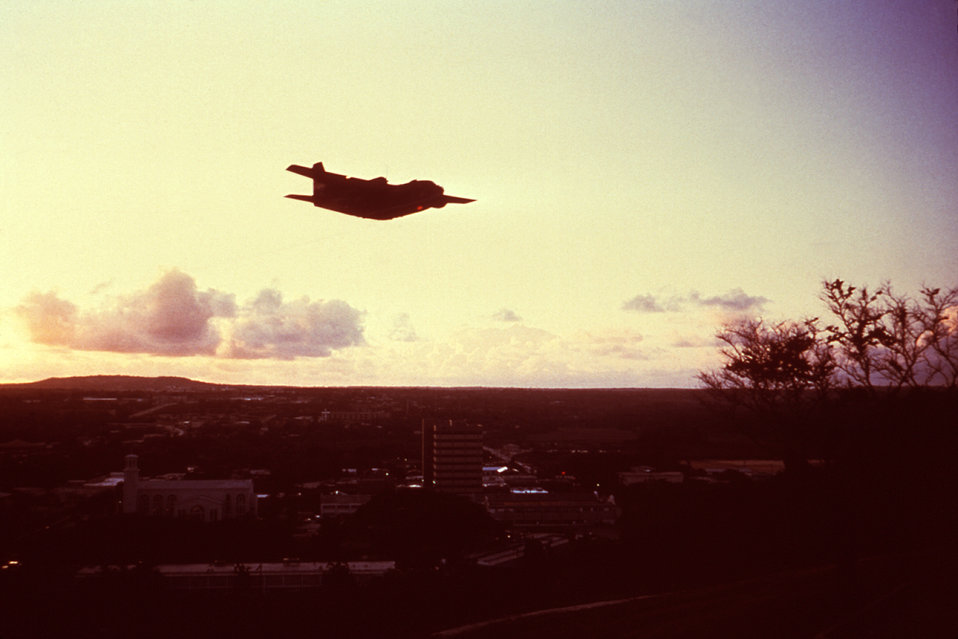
This 1975 photograph depicts a C-123 USAF aircraft dispersing an insecticidal spray over Guam in order to control a Dengue fever outbreak.